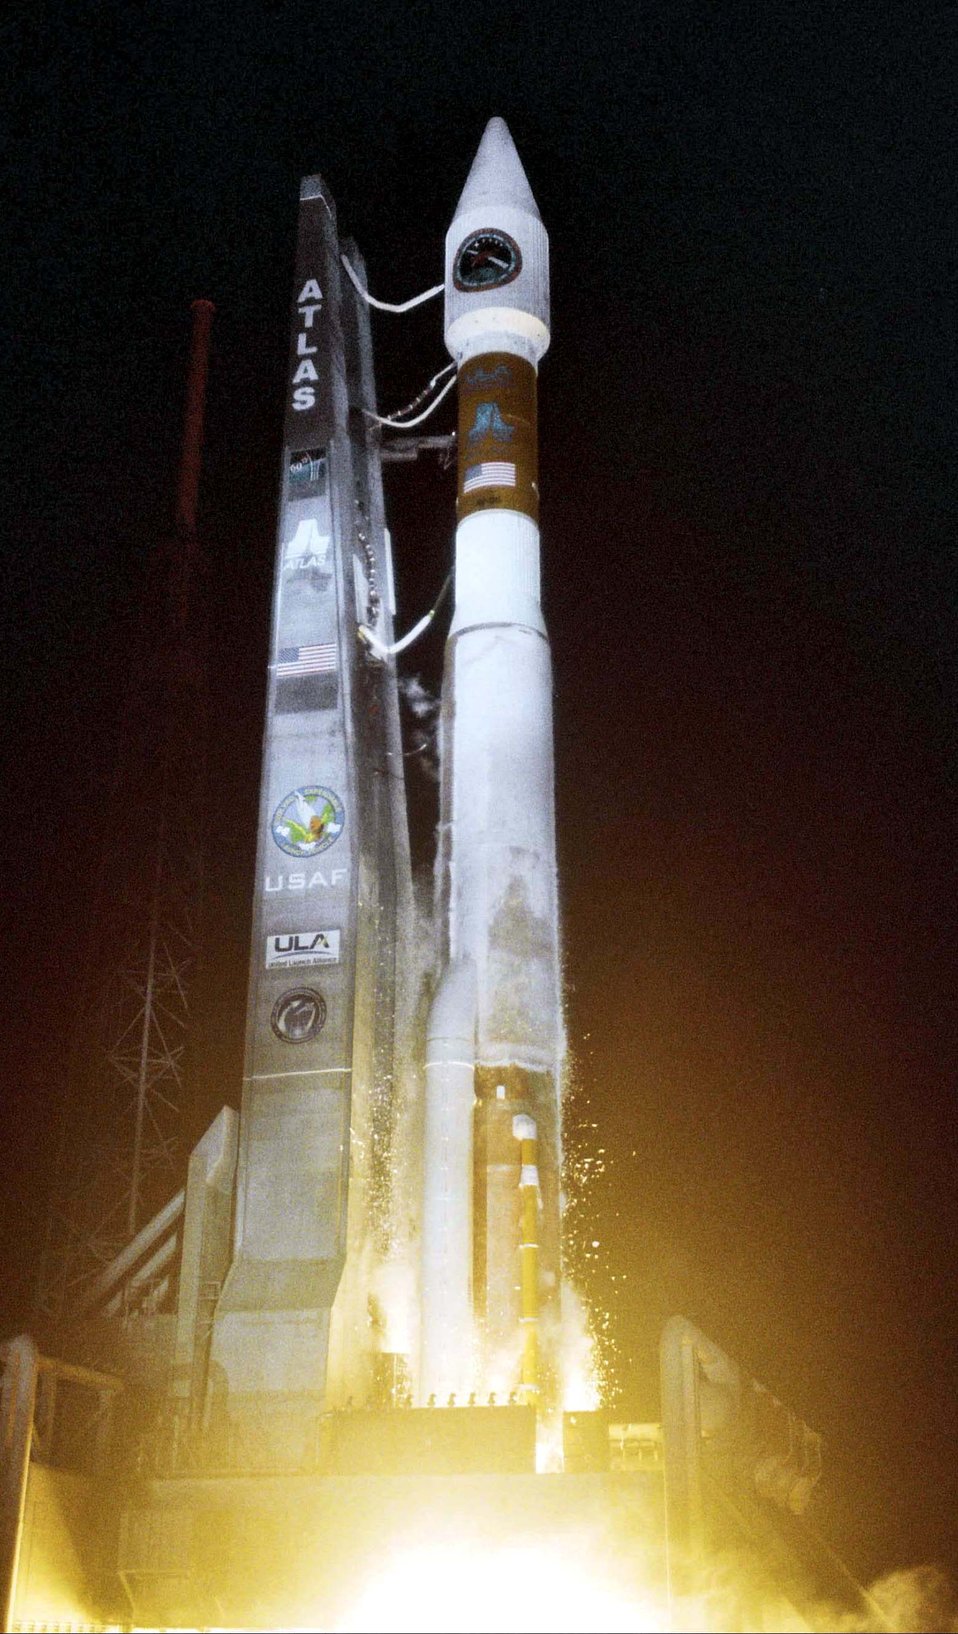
First next-generation communications satellite launches

The Air Force launched the first of a new generation of military communications satellites, the Wideband Global SATCOM, aboard an Atlas V launch vehicle Oct. 10.